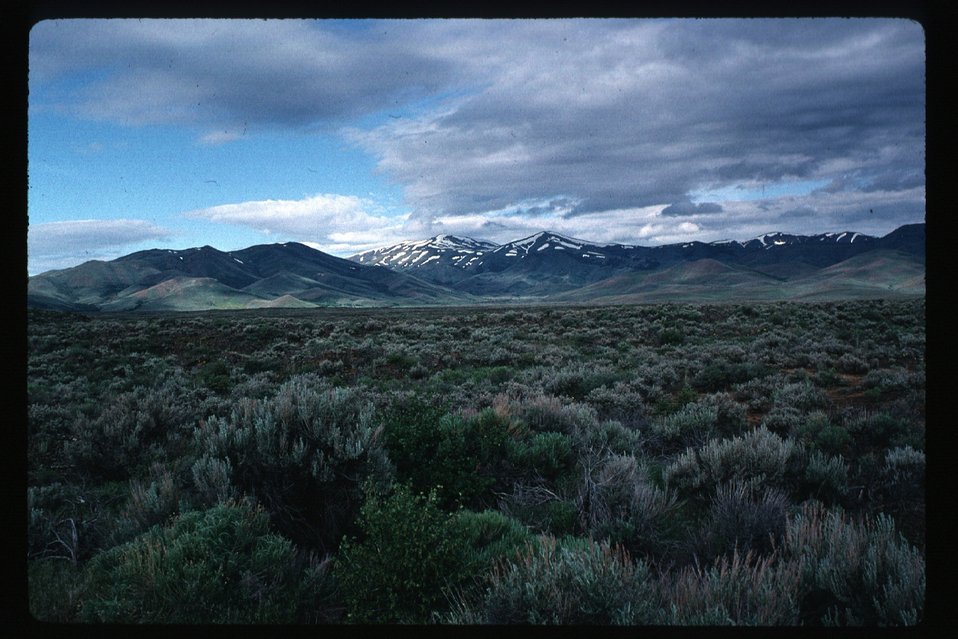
Wet Creek riparian project Idaho Falls Field Office USRD Upper Snake River District